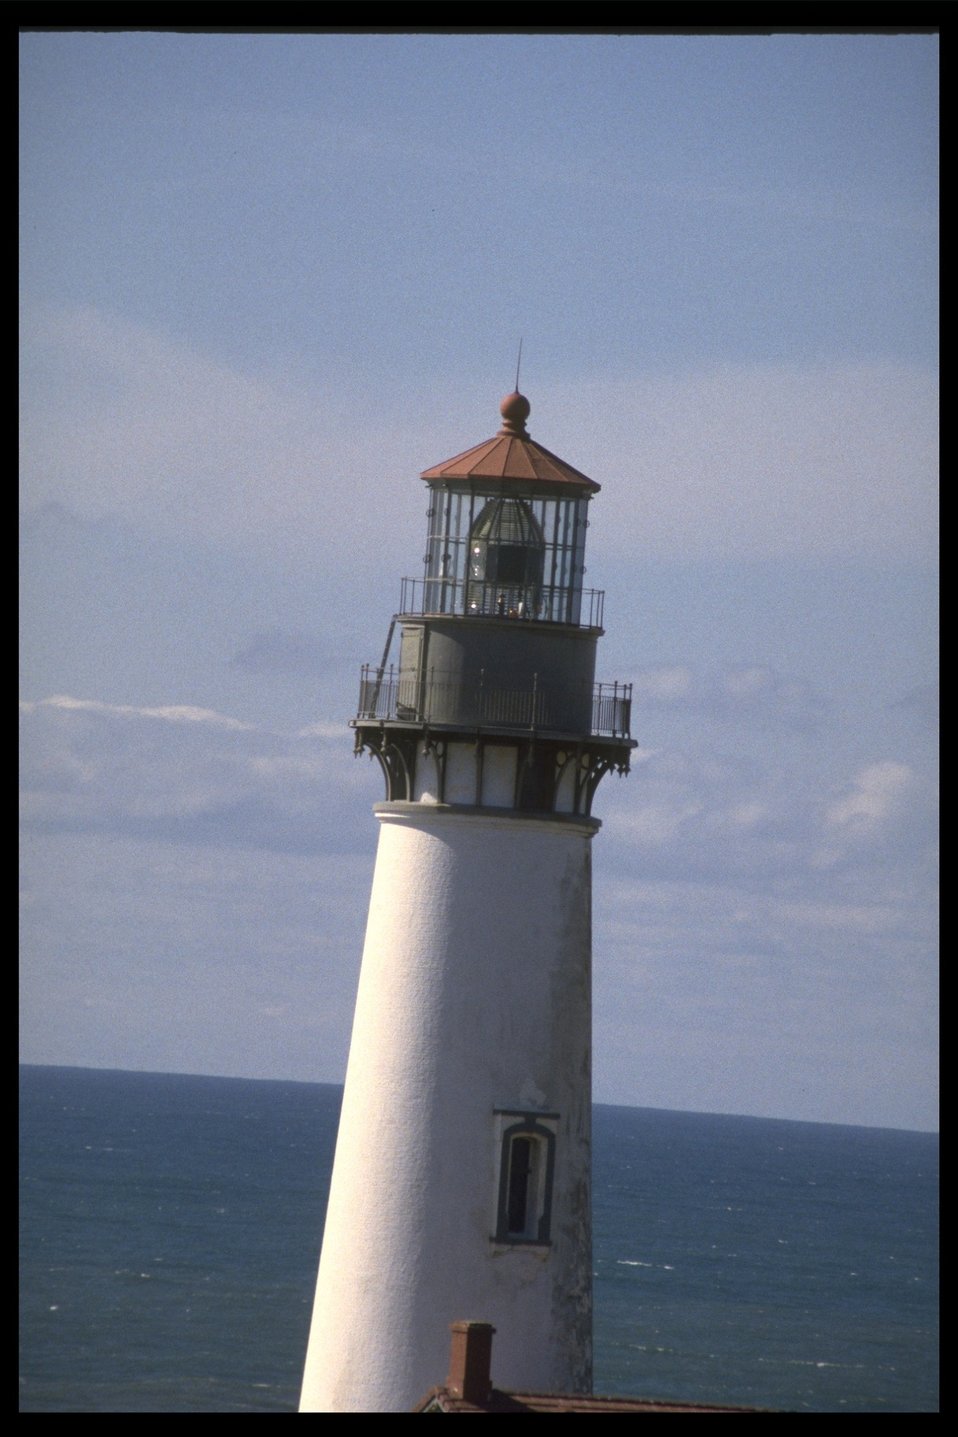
Yaquina Head Lighthouse.